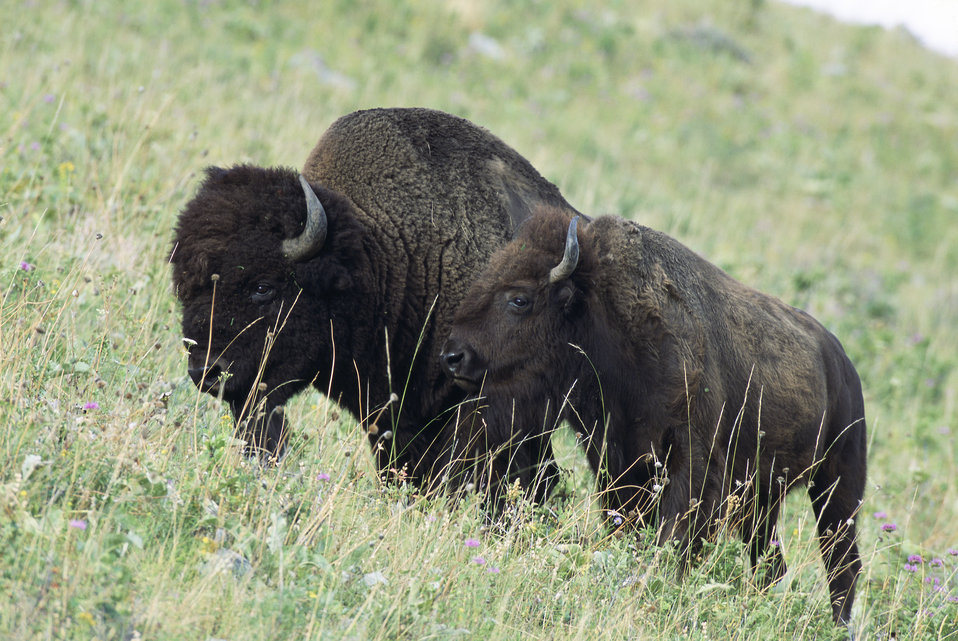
American Bison

Adult and juvenile bison on the National Bison Range in Montana